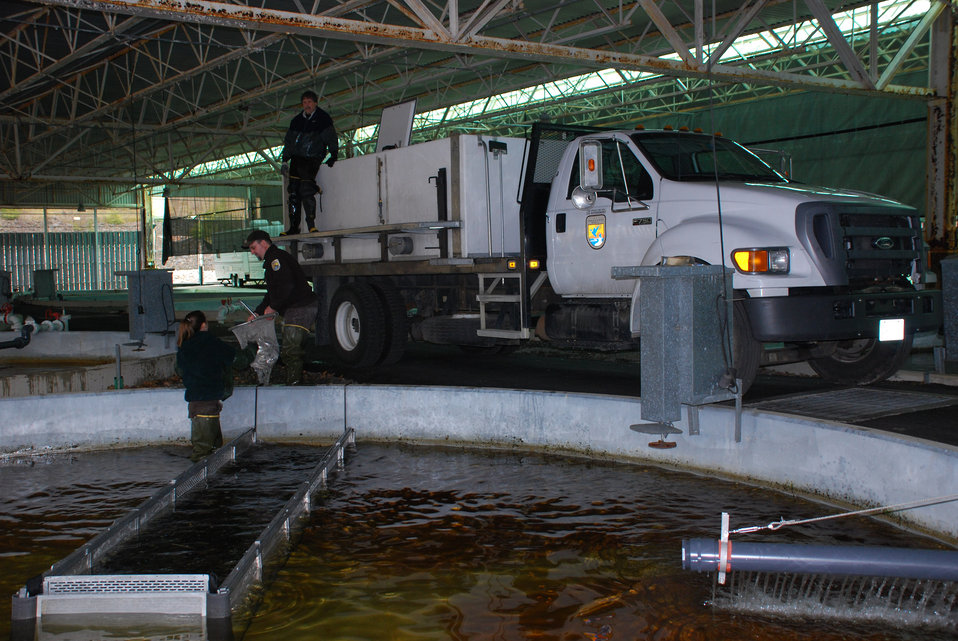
Pool to Truck

The distribution trucks are loaded with Atlantic salmon smolts from the pool at the Green Lake National Fish Hatchery in Ellsworth, Maine.